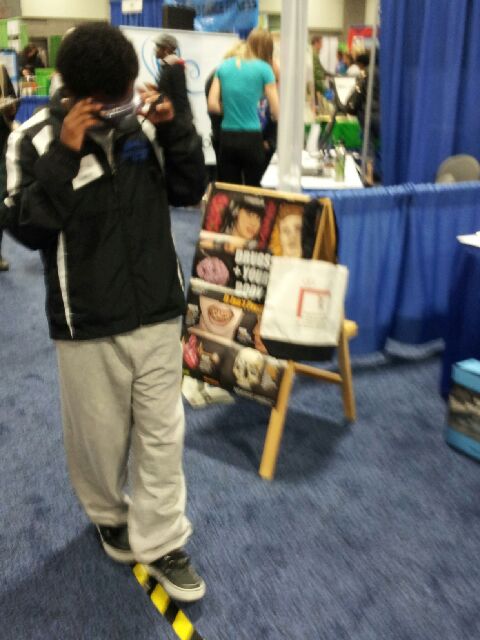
The NBC4 Health and Wellness Expo January 11-12, 2014